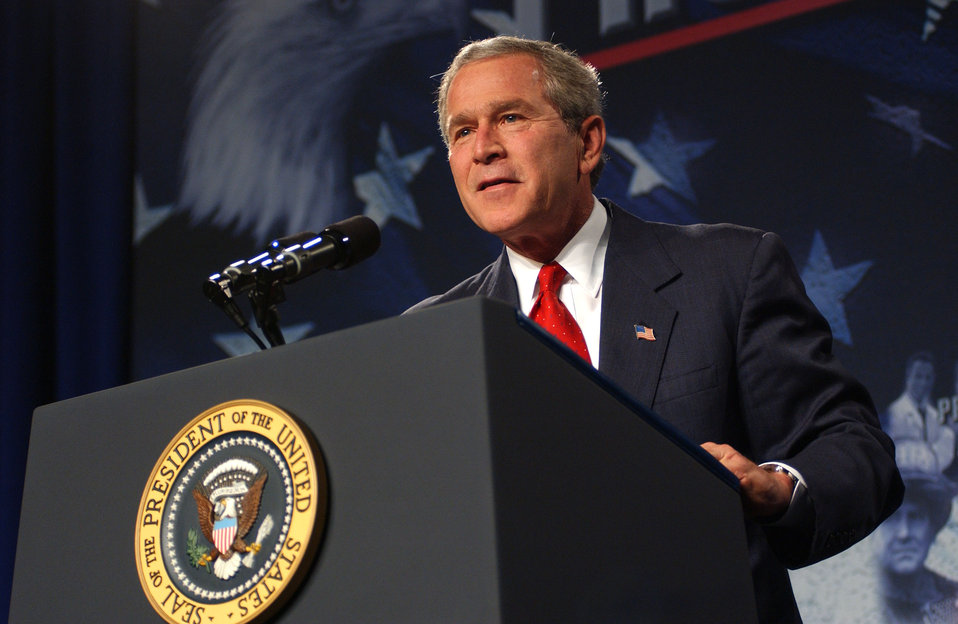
President George W. Bush visits Oak Ridge in 2004. The visit was highlighted with gas centrifuge components and uranium processing equipment sent from Libya to Oak Ridge as part of nuclear non-proliferation efforts